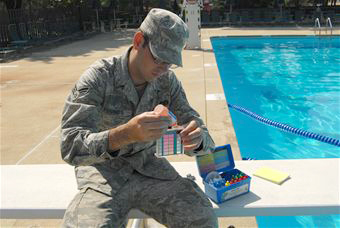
Plumbers keep the flow

Senior Airman James Founds checks the pH balance and chlorine levels July 15, 2010, at the Pope Air Force Base, N.C., pool. Airman Founds is a 43rd Civil Engineer Squadron plumber.